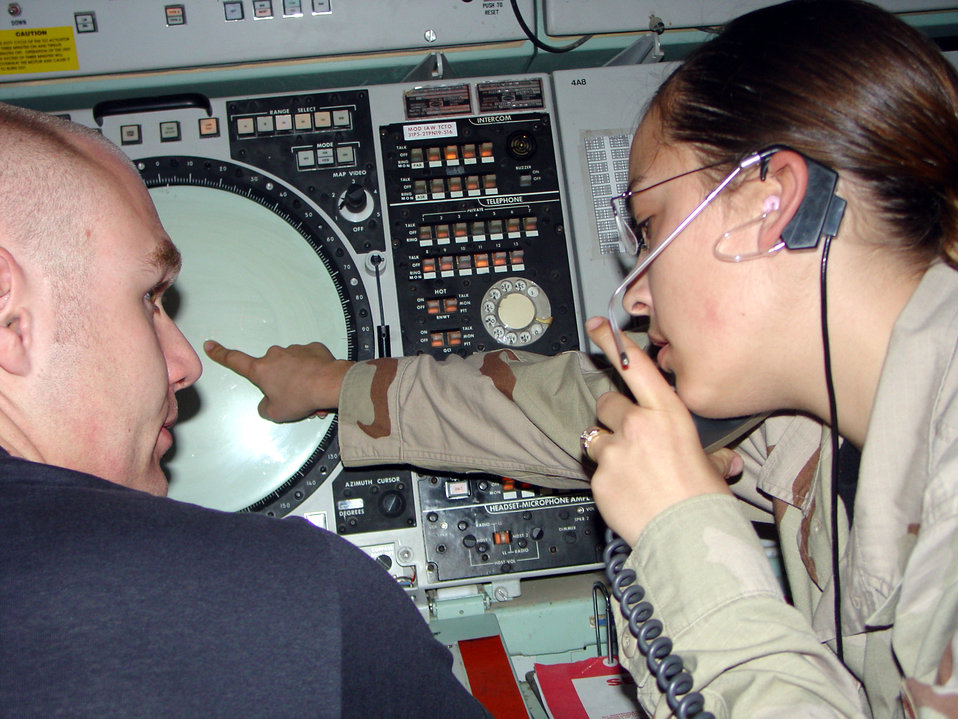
Controlling the sky

TALLIL AIR BASE, Iraq -- Senior Airman Caryn Baksis informs Senior Airman Jesse Fox of an aircraft entering the Tallil airspace that is being controlled by the Kuwaiti Center. Airmen Baksis and Fox are 332nd Expeditionary Operations Support Squadron air traffic controllers. Airman Baksis is deployed from Cannon Air Force Base, N.M., and Airman Fox is deployed from Ellsworth AFB, S.D.